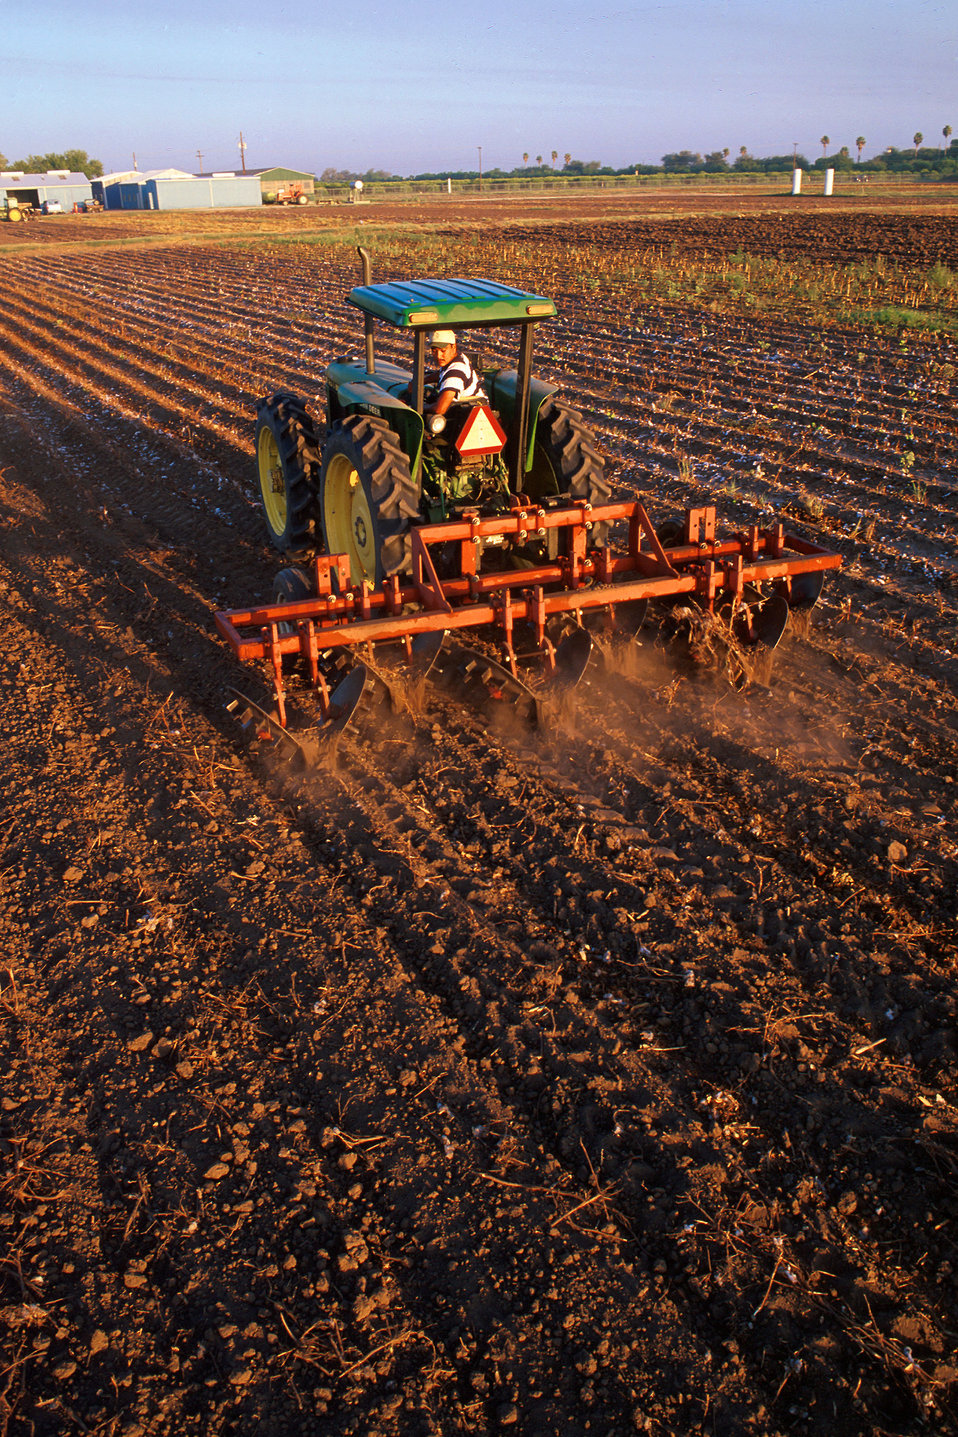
The stalk-puller attachment is drawn through this cotton test field near Weslaco, TX by U.S. Department of Agriculture (USDA) Agricultural Research Service (ARS) field technician Victor Valladares. The stalk-puller plucks out the whole plants, roots and all.